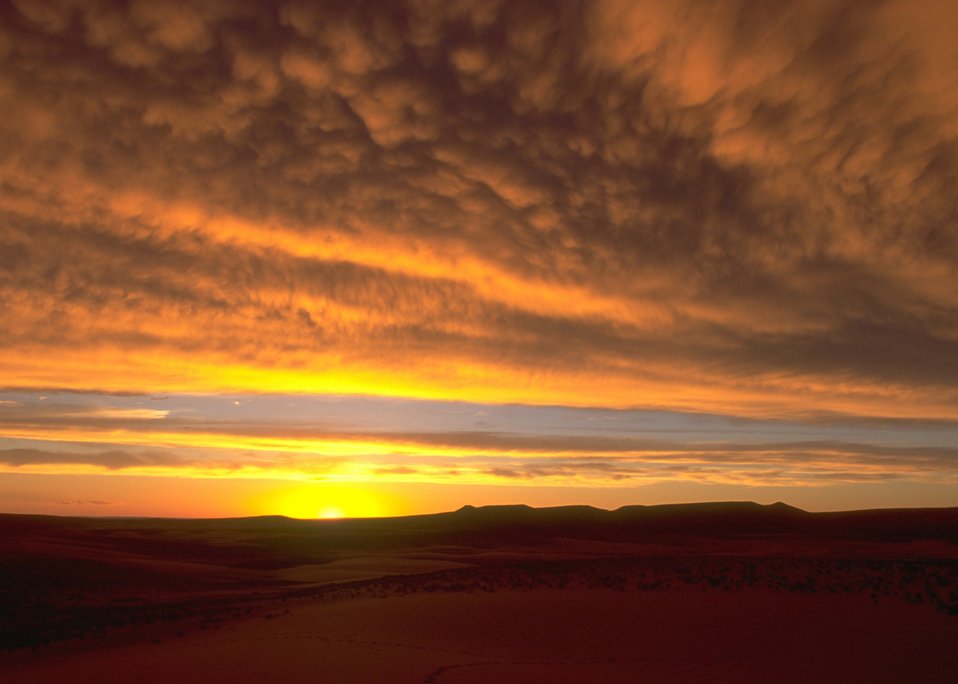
Sunset over OHV Sand Dunes Area, Rock Springs Field Office.